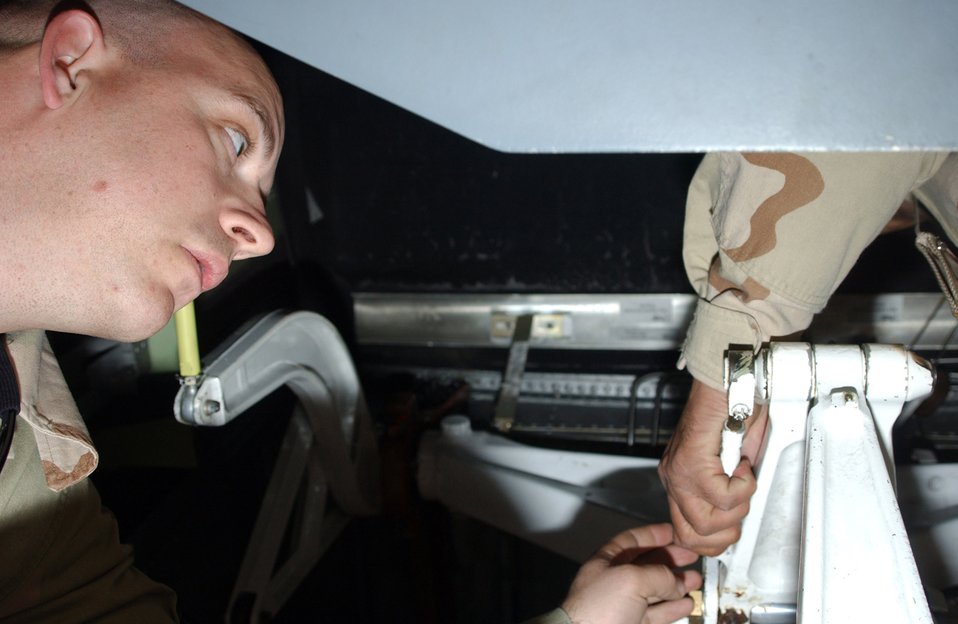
Iraqi Air Force

ALI BASE, Iraq (AFPN) -- Tech. Sgt. John Carpenter helps an Iraqi Air Force maintainer inspect the front landing gear of an Iraqi C-130 Hercules. The aircraft just returned from depot level maintenance. Advisory support team instructors of the 777th Expeditionary Airlift Squadron helped Iraqi Air Force Squadron 23 (Transport) maintainers through the